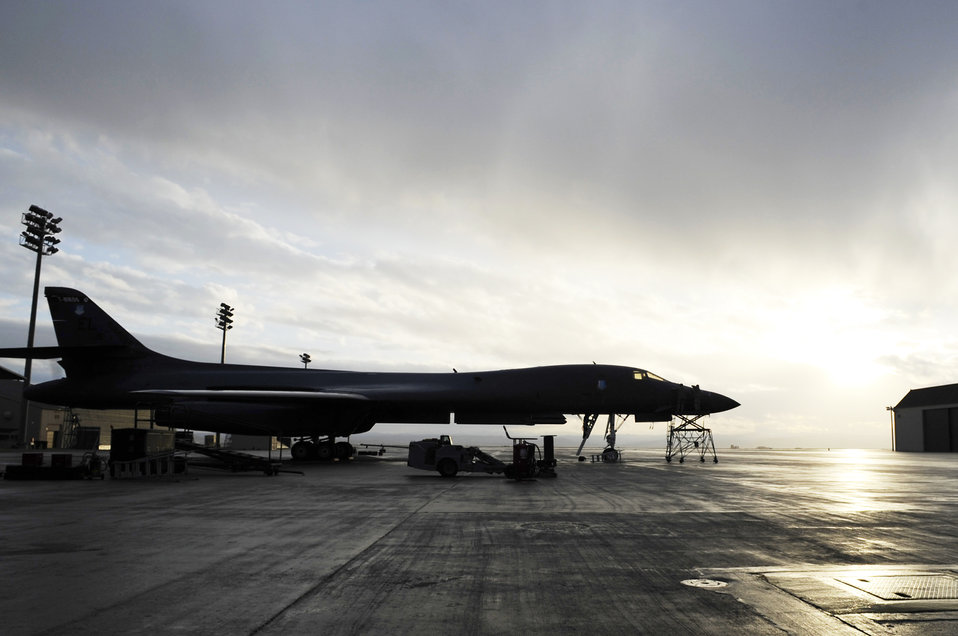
B-1s at Ellsworth

A B-1B Lancer sits on the Ellsworth Air Force Base, S.D., flightline, Oct. 15, 2009, before a training mission. The B-1 can rapidly deliver massive quantities of precision and non-precision weapons against any adversary, anywhere in the world.